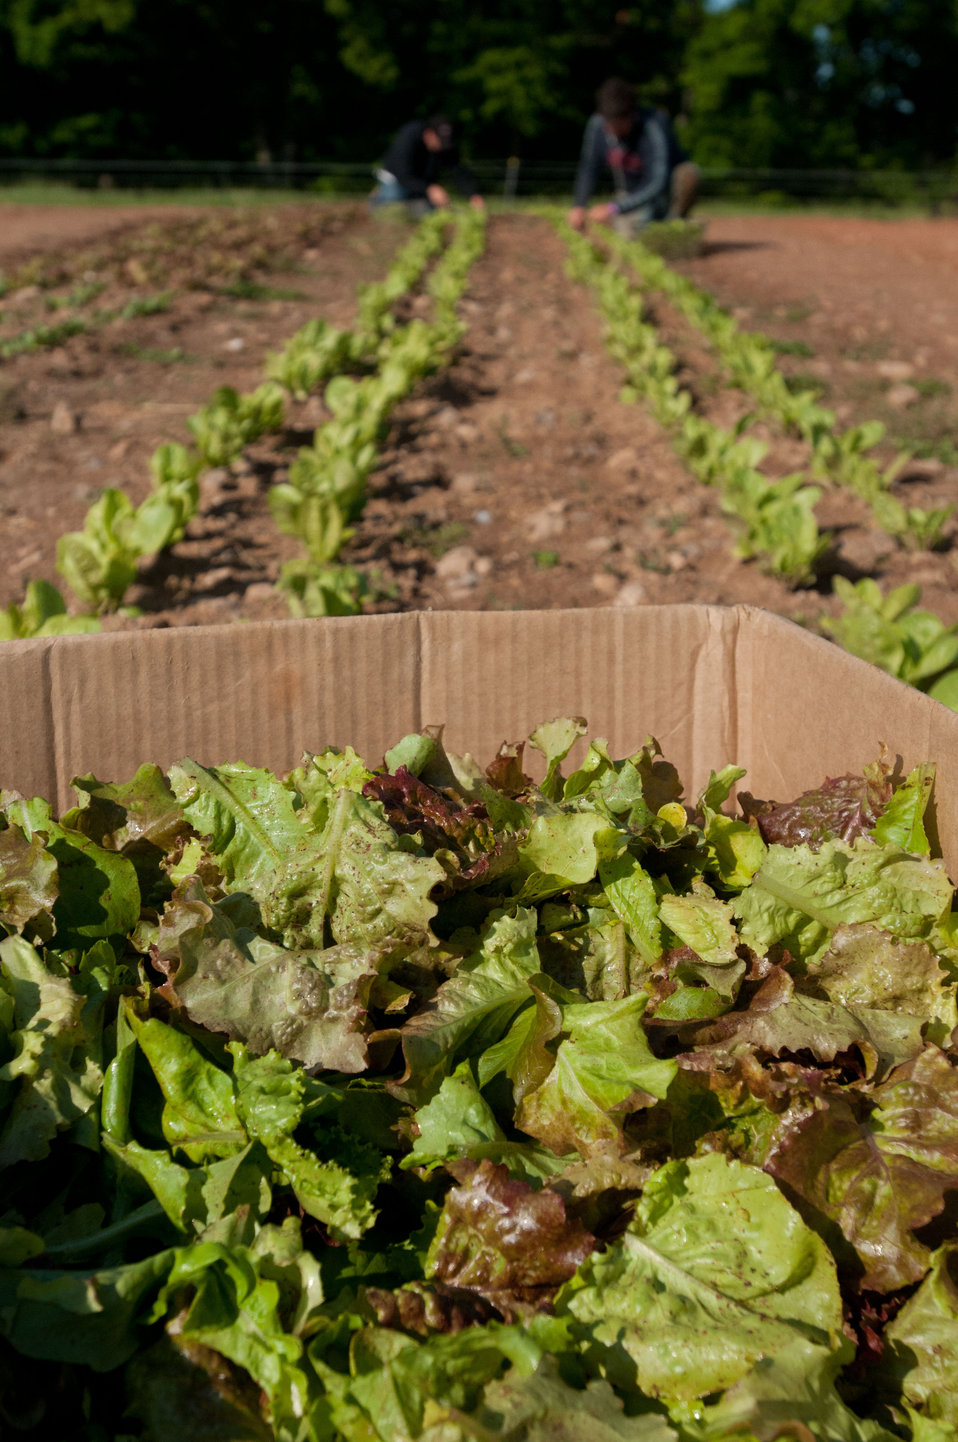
Andrew Myers (left) and Christopher Douherty hand harvest baby-lettuce leaves at the Manakintowne Specialty Growers, a 21-acre farm in Powhatan County, Virginia, on Friday, May 6, 2011. Specialty produce for chefs and markets of Richmond, Charlottesville and Williamsburg, is raised on the farm. The plants continue to grow leaves and can be harvested several times before they have to be replaced. Rotating the crop types and using proper intervals, maintain sustainable soil and plant health. This is one of the farms that produces unique greens such as French Sorrel, Pea Shoots, Frisee, Tat soi, Mizuna, Pink/green radish shoots, Sunflower shoots, Baby red mustard, Tuscan Kale, Beet greens. All harvested by hand, micro greens such as Pak choi, Tat soi, Mizuna, Purple kohlrabi, Shungiku (edible chrysanthemum), Ruby chard, Purple/Daikon/Triton radish, Red amaranth and Bull's Blood Beet as well as edible flowers such as African Blue Basil, Nasturtiums, Johnny Jump Ups, and Chive blossoms Dianthus (pinks).. The seasonal choices are listed by suppliers and ordered by members on Lulus Local Food website, the food is distributed to pick-up points in the Richmond area. Together, they offer a wide variety of household food staples and specialty fruits, vegetables, meats, soaps, eggs, cheeses, flowers, honey, pastas, sauces, syrups, baked goods, mushrooms, flour and grains from and for the Richmond area.